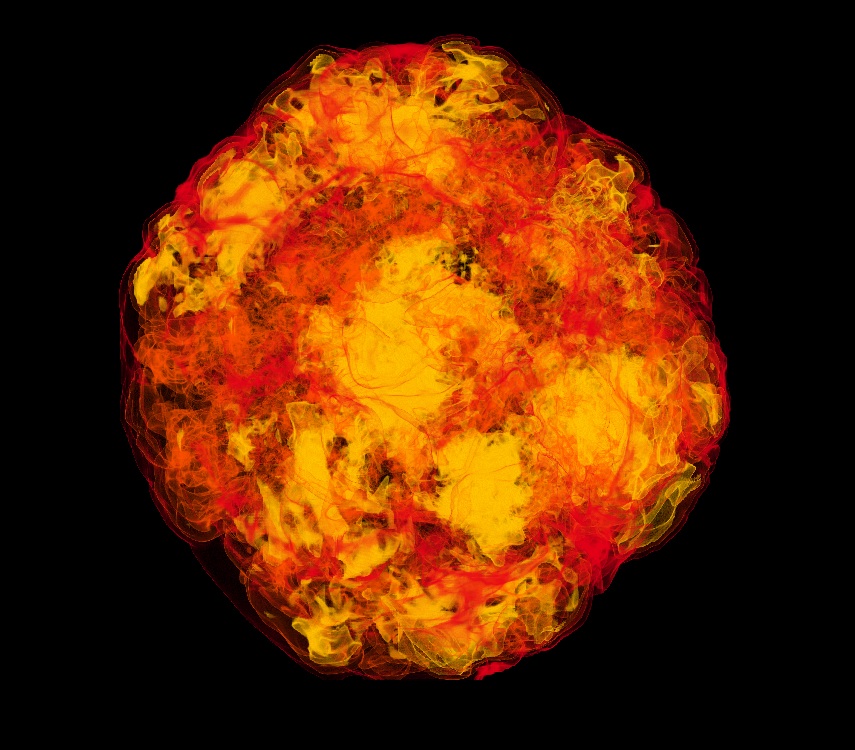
Volume rendering of the entropy in a 3D core-collapse supernova simulation at Argonne National Laboratory.